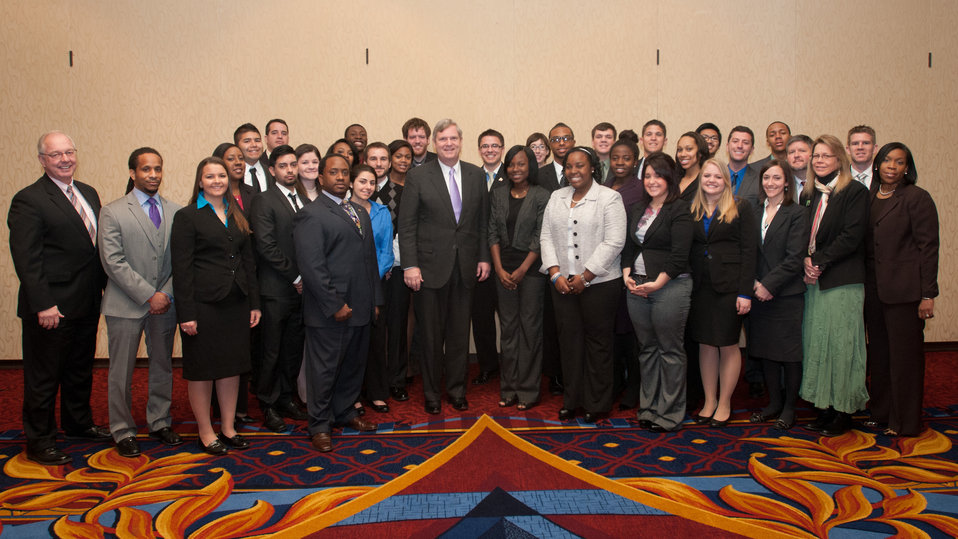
Agriculture Secretary Tom Vilsack spoke with and took questions from the U.S. Department of Agriculture (USDA) Agricultural Outlook Student Diversity Program competitive essay winners at the 2013 Agricultural Outlook Forum, held at the Crystal Gateway Marriott Hotel, Arlington, Virginia on Thursday, Feb. 21, 2013. This annual Forum brings together producers, policymakers, and business, government, and industry leaders to meet, exchange ideas, and discuss timely agriculture issues.